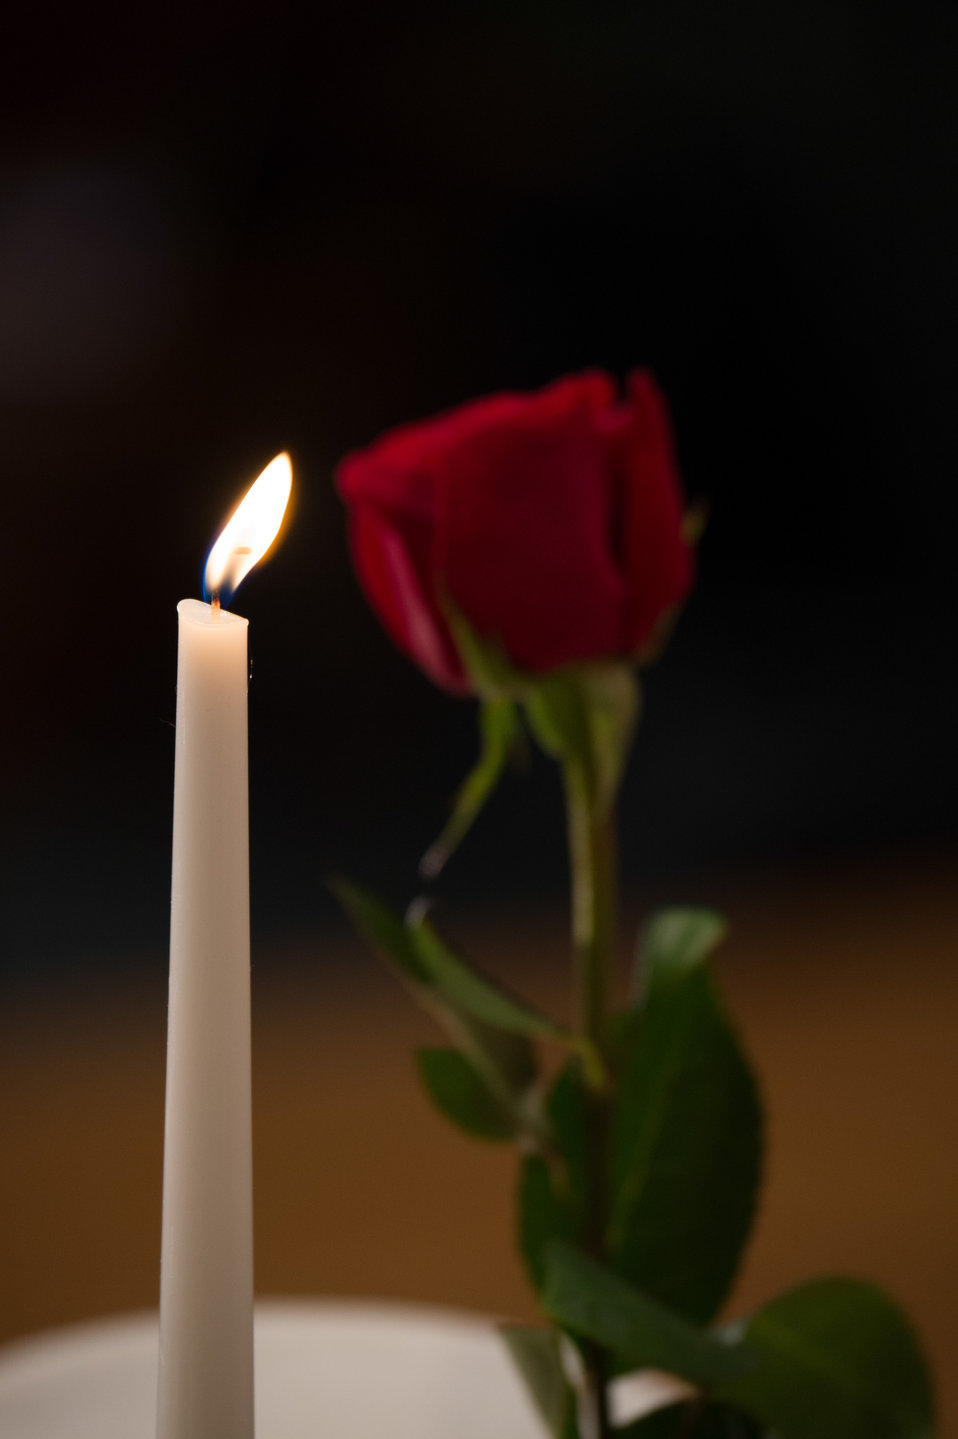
The POW/MIA Missing in Action Table and Honors Ceremony, reminds us that the candle symbolizes the frailty of the prisoner alone trying to stand up against their oppressors, during the 2013, U.S. Department of Agriculture (USDA), Veterans’ Day Observance, whose theme is “VALOR, COURAGE, SACRIFICE – HONORING ALL WHO SERVED,” in Washington, DC, on Wednesday, November 20, 2013.